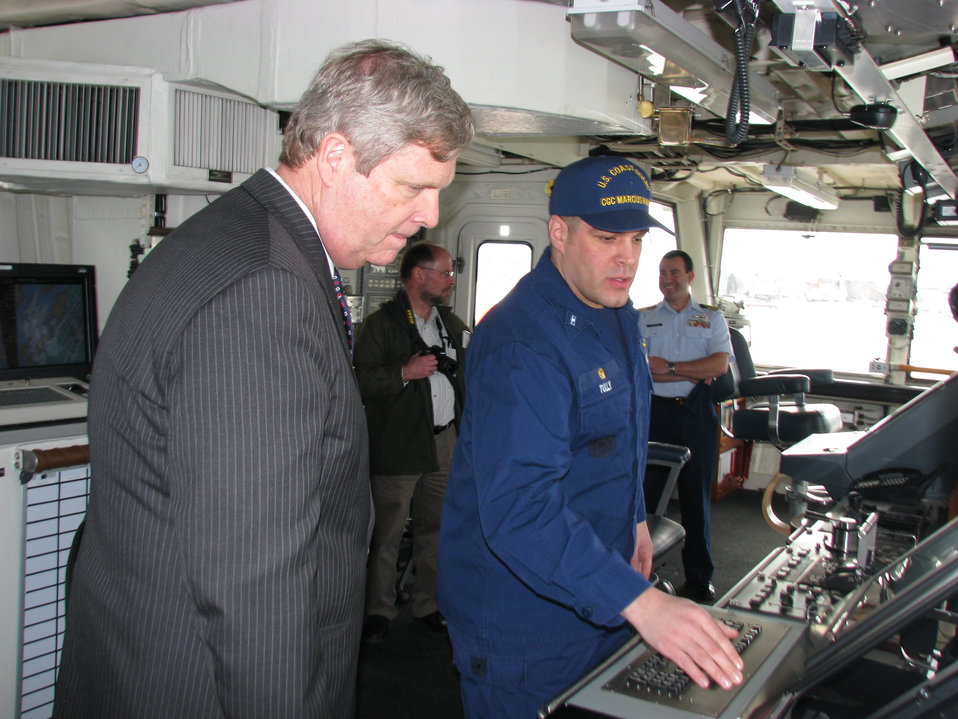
Agriculture Secretary Tom Vilsack tours the buoytender USCG Marcus Hanna at the U.S. Coast Guard Station in South Portland, ME on Thursday, Mar. 14, 2013. Secretary Vilsack highlighted the importance of nutrition to America’s military readiness. Today, only a quarter of Americans aged 17 to 24 are eligible to serve in the armed forces – in part because many are overweight or obese.